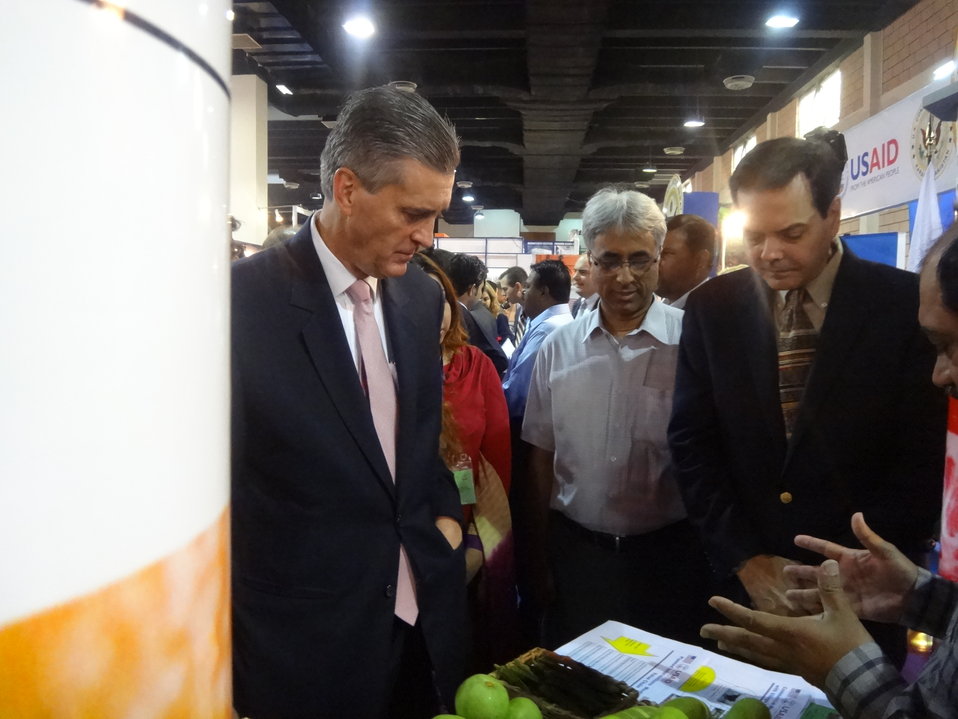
US Ambassador's visit to The Agribusiness Project at TDAP Expo, Karachi, September 27, 2013 (6)